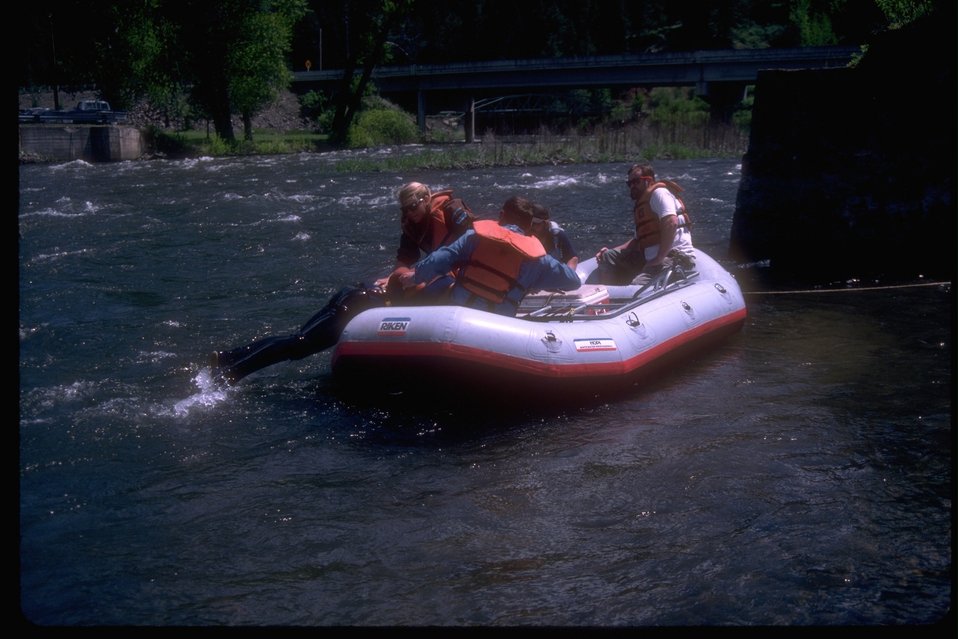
White Water Rescue Training on the Grand Ronde River.